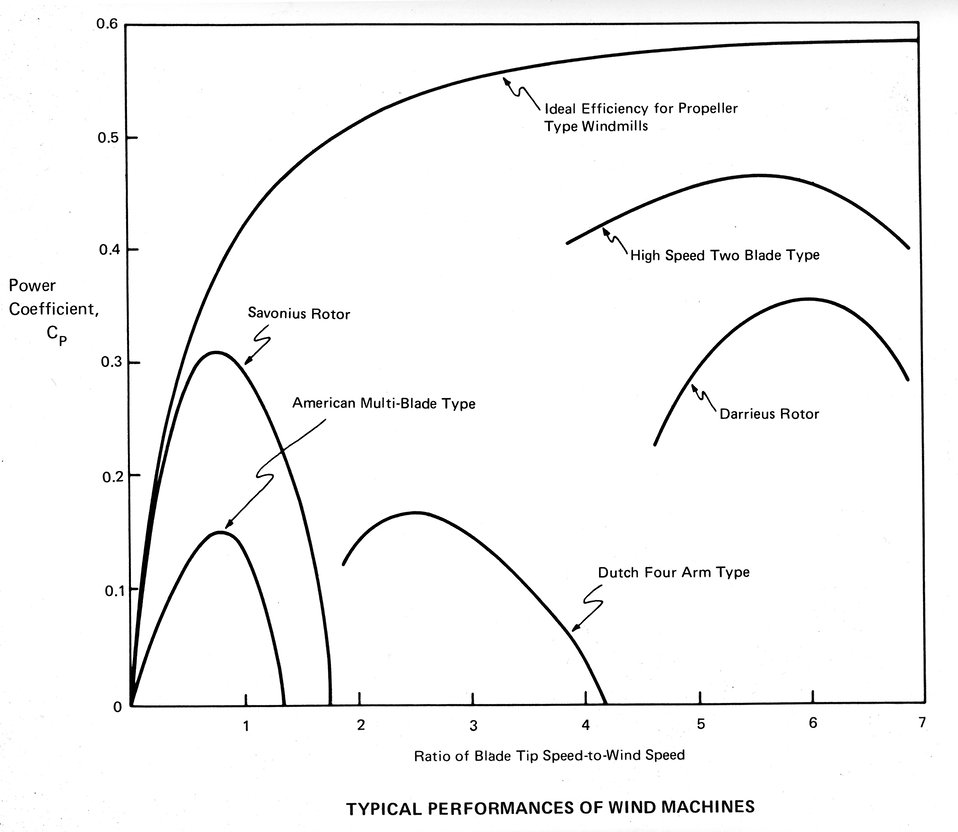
Old-fashioned wind machines, like the four-arm Dutch windmill and the multi-bladed American farm windmill, had blades that moved slowly in comparison with the wind speed, and were capable of capturing less than 20 percent of the available power in the wind. c. 1977